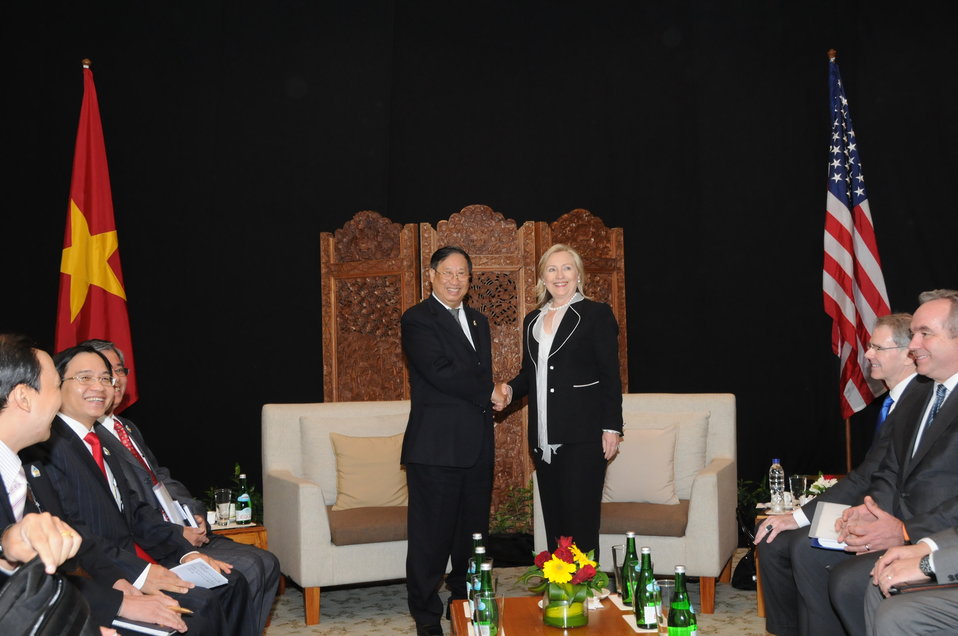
Secretary Clinton Shakes Hands With Vietnamese Foreign Minister Phạm Gia Khiêm

U.S. Secretary of State Hillary Clinton shakes hands with Vietnamese Foreign Minister Pháº¡m Gia Khiêm after their bilateral meeting in Bali, Indonesia, on July 22, 2011. Seated on the right are: U.S. Ambassador to ASEAN David Carden and U.S. Assistant Secretary of State for East Asian and Pacific Affairs Kurt Campbell.